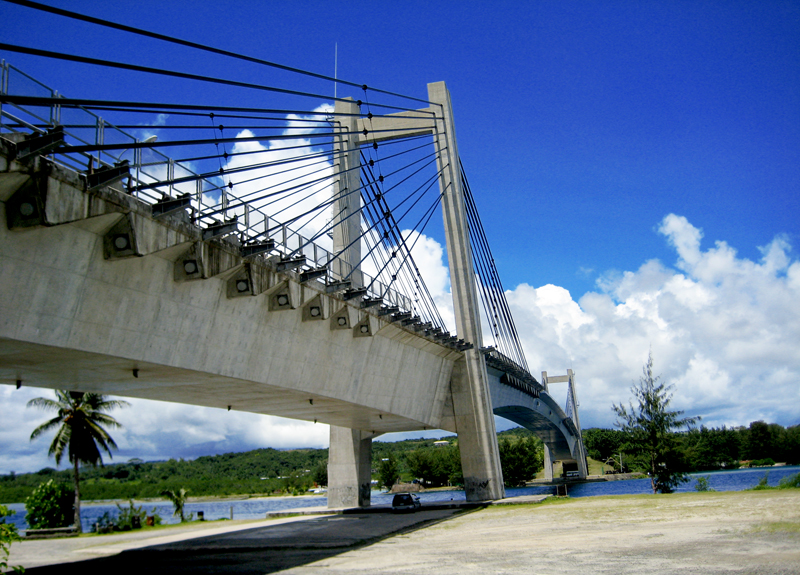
Japan Palau Friendship Bridge (Photo-2007) Category:Palau